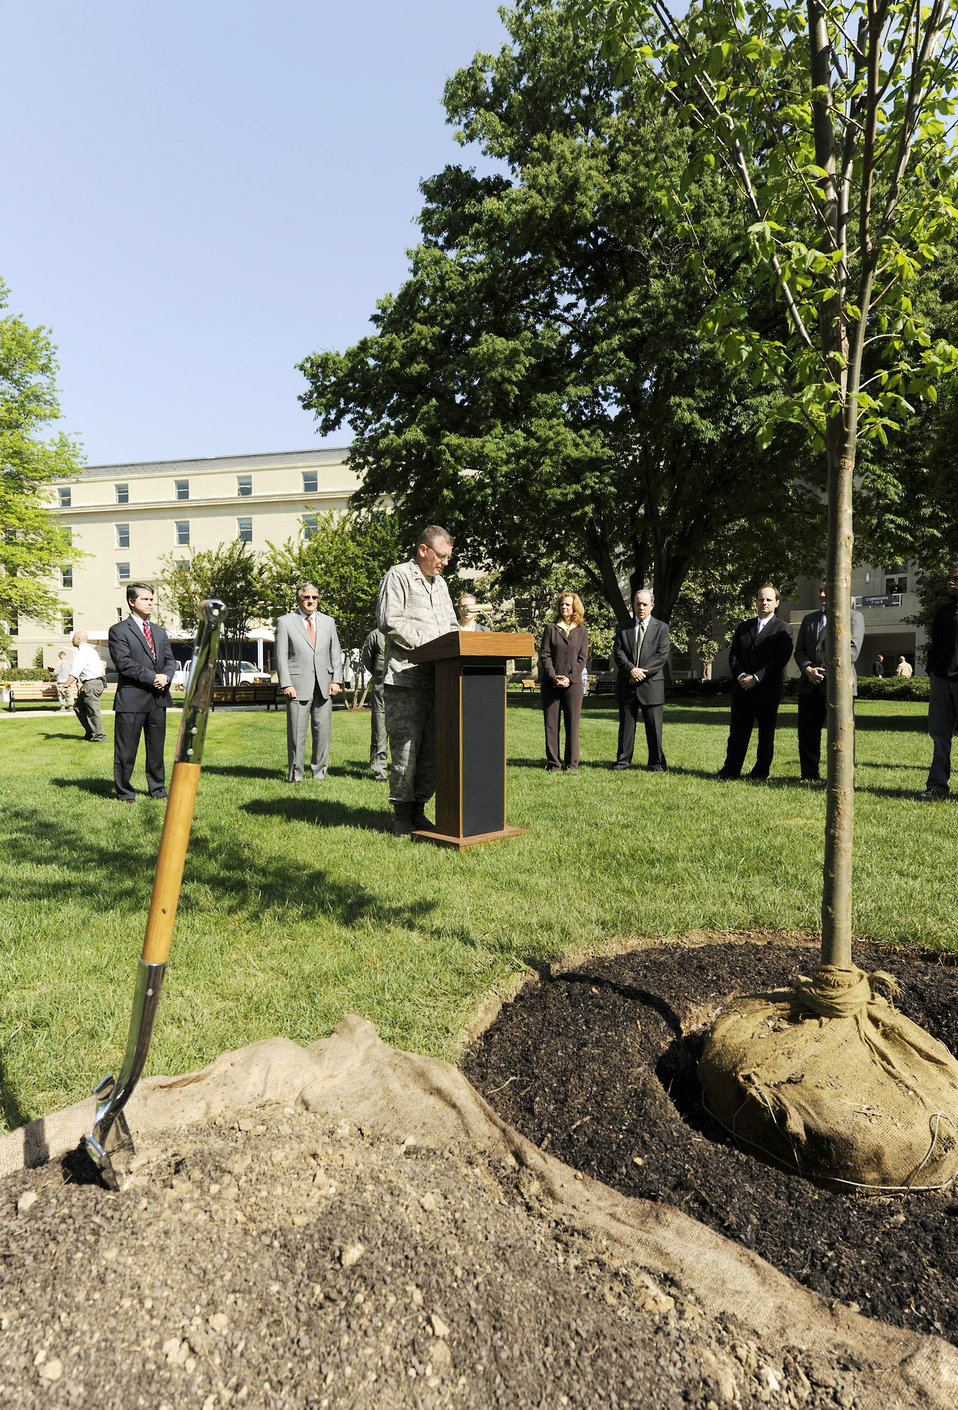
Pentagon officials join Air Force bases for '40 trees in 40 communities' tree planting

Lt. Col. Jeffrey Gillen delivers remarks to kick off